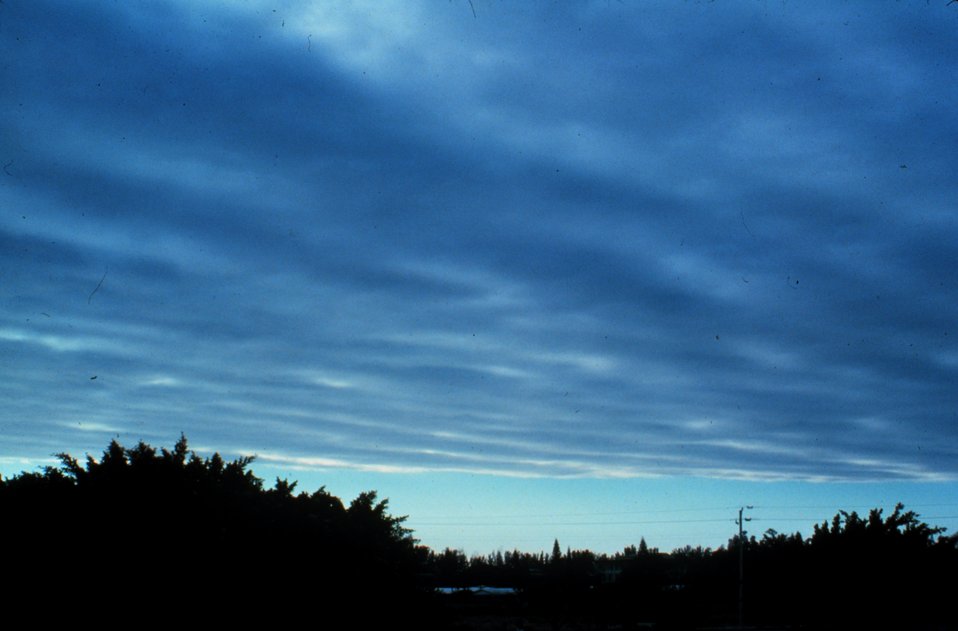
Stratus cloud deck.